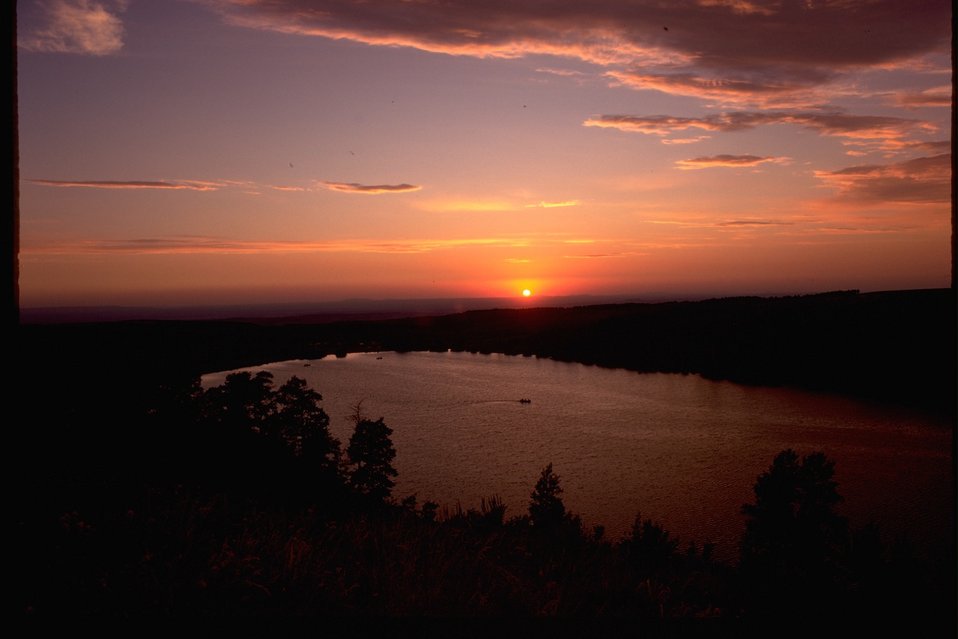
Fish Lake at sunset.